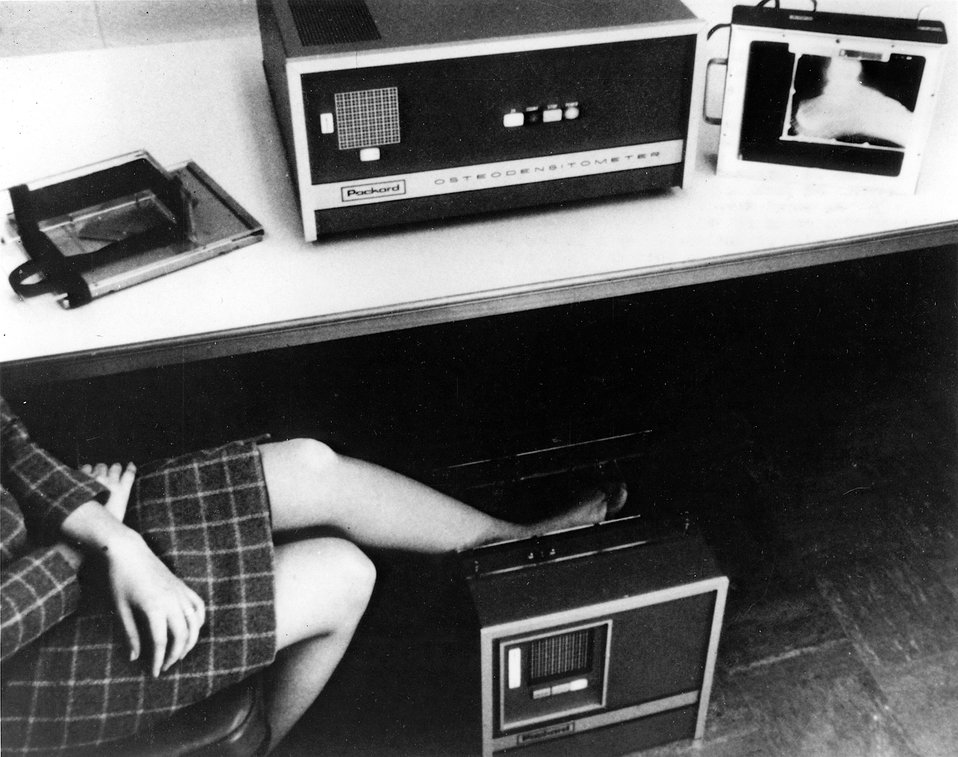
An instrument developed at Argonne to measure the changes of calcium content in bones.
c.1971